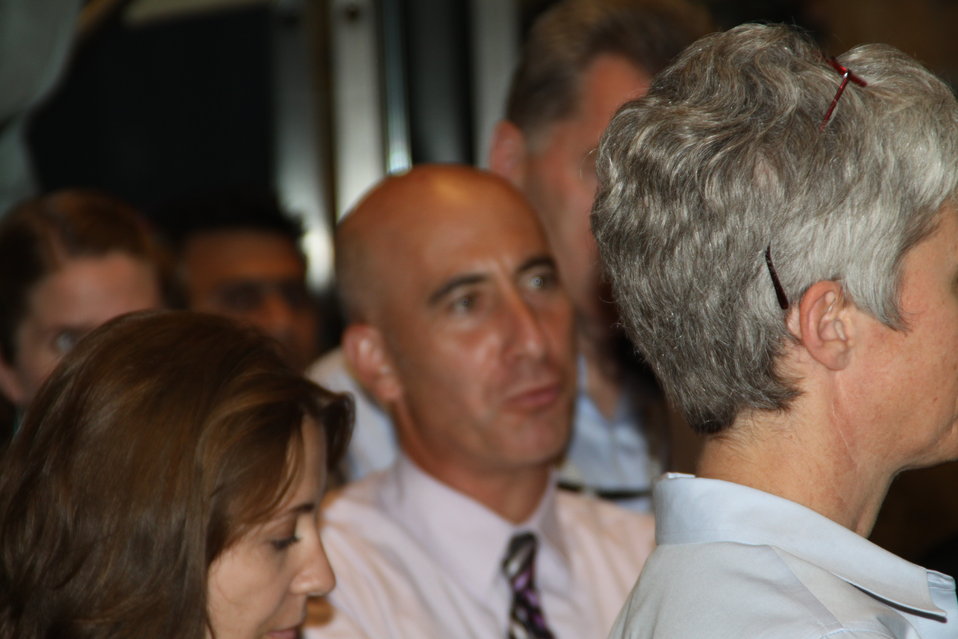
US Embassy Town Hall July 21, 2010